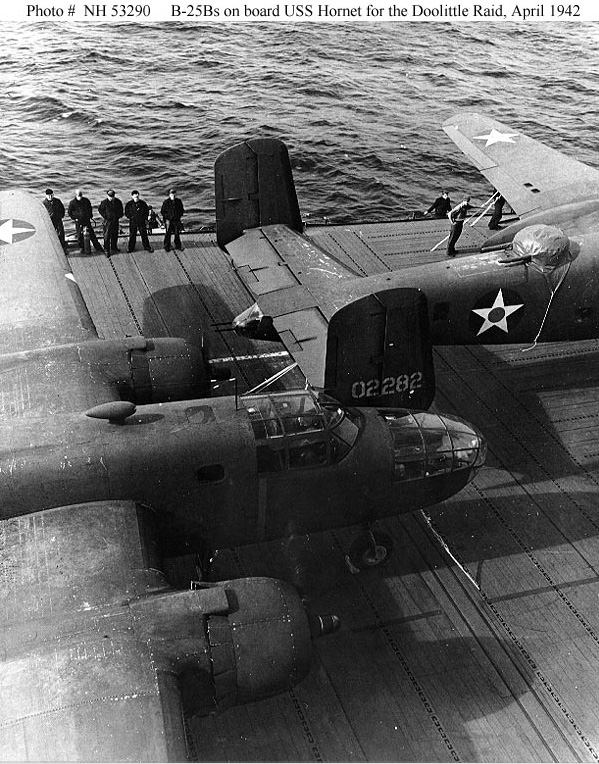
Doolittle's Raid

Two of the operation's 16 B-25B bombers, parked on the flight deck of USS Hornet (CV-8), while en route to the mission launching point. The plane at right has tail No. 40-2282 and mission plane No. 4. During the raid, 2nd Lt. Everett W. Holstrom Jr., piloted the aircraft to targets in Tokyo. Note protective cover over its gun turret and wooden dummy guns mounted in its tail cone. The plane at left is warming up its engines, as was done periodically during the voyage.